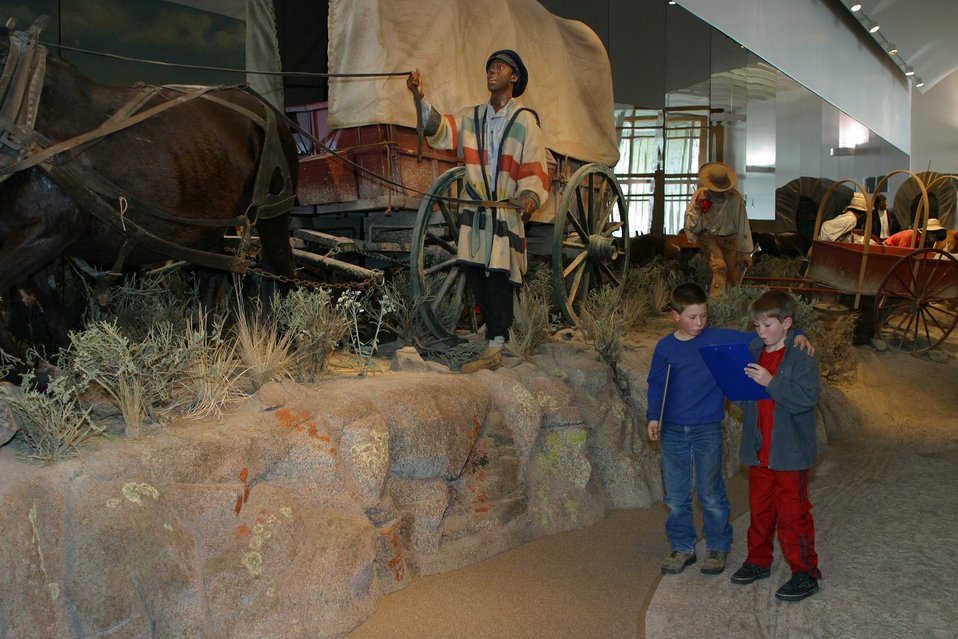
Hundreds of school children visit the National Historic Oregon Trail Interpretive Center every year.